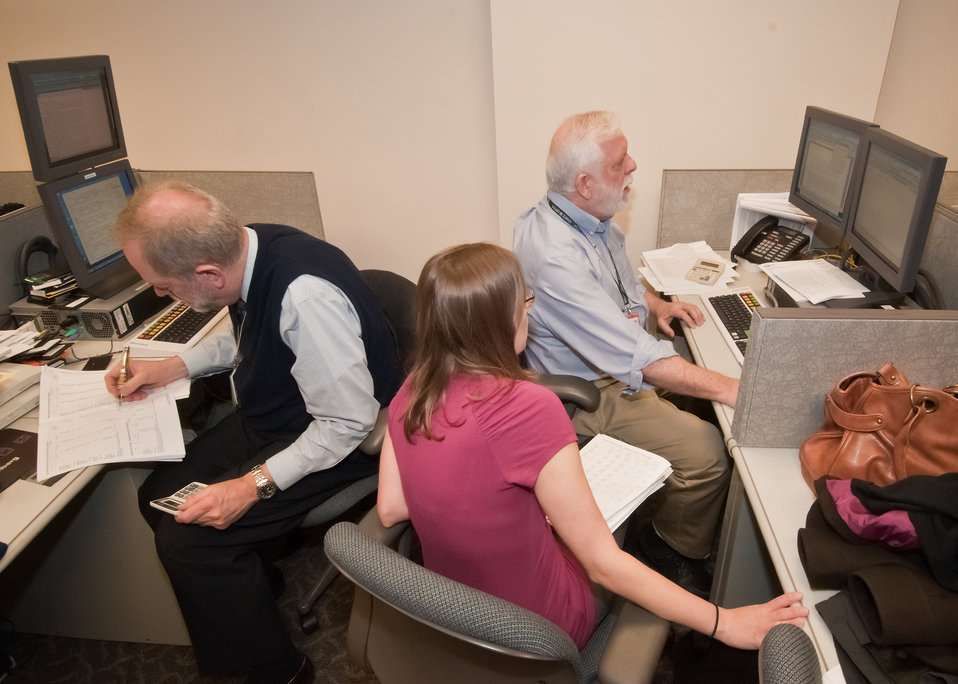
From left: Steve Geiman, Whitney McFerrron and Daniel Enoch, of Bloomberg News review the United States Department of Agriculture, National Agricultural Statistics Service March Agricultural Survey before the information is released in Washington, DC, Thursday, March 31, 2011. The NASS lockup is agricultural commodity information held until the Secretary of Agricultural or Secretary’s Designee has signed and released the information. The signing is the official act of recognizing the information as an official USDA document.